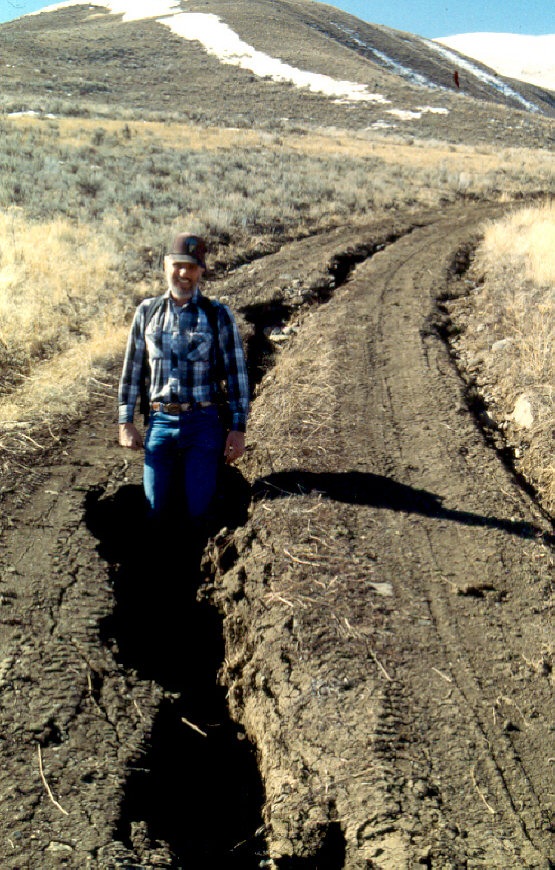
Roads Recreation Erosion Salmon Field Office UCSC Upper Columbia Salmon Clearwater District